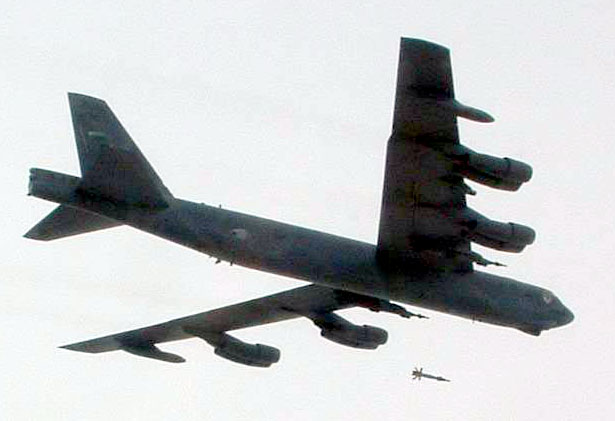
B-52 dons new upgrade

EDWARDS AIR FORCE BASE, Calif. -- A B-52 Stratofortress with the Litening II targeting pod drops a joint direct attack munition during an operational utility evaluation to ensure the integration of the pod with the airframe was successful. The test went